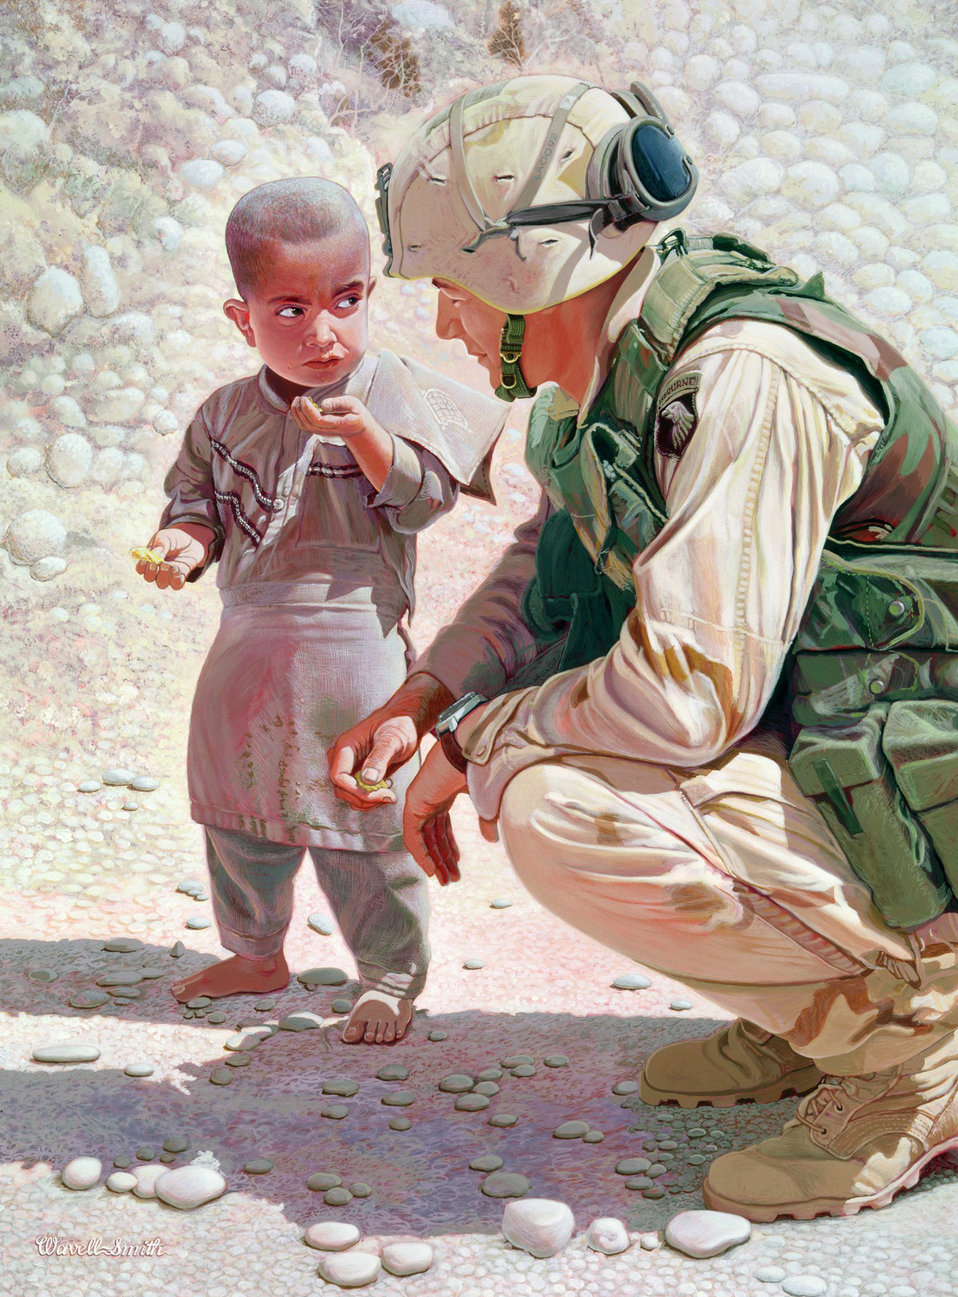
Air Force receiving OIF artwork

WASHINGTON --